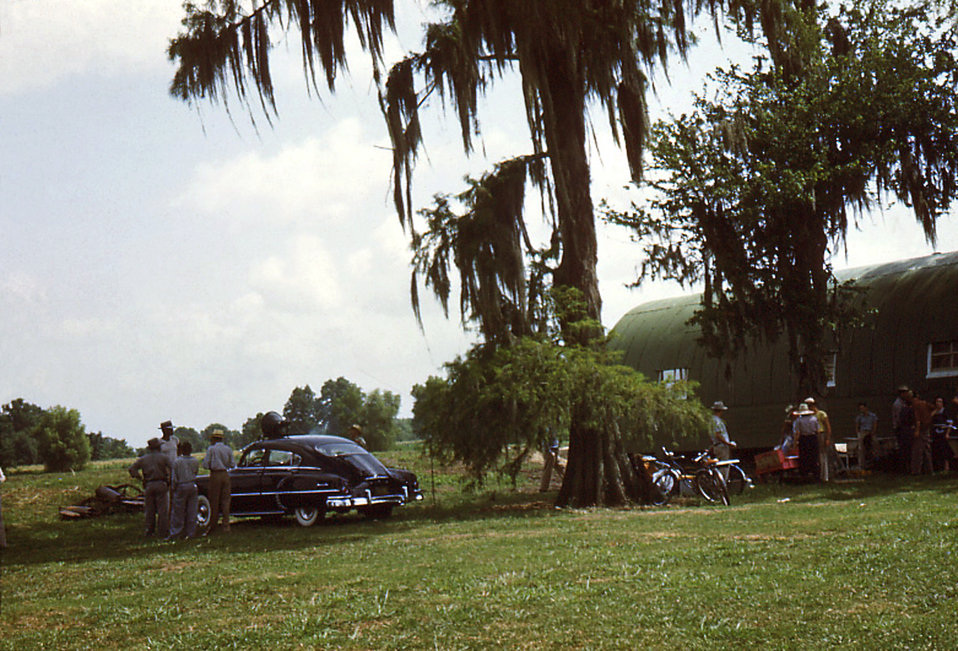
The Carville, Louisiana, Leprosarium patients depicted in this historic image were photographed while picnicking on the Lake Johansen levee, where many such patient gatherings had taken place. Lake Johansen was named after one of the Leprosarium's Chief Medical Officers, Dr. Frederick A. Johansen. The hospital was a self-contained compound with its own storehouse, laundry, food-processing facilities, patient treatment centers, and recreational facilities such as this picnic area. Outdoor activities helped to improve the dispositions of the patients who'd been quarantined, and stigmatized due to their curable affliction.